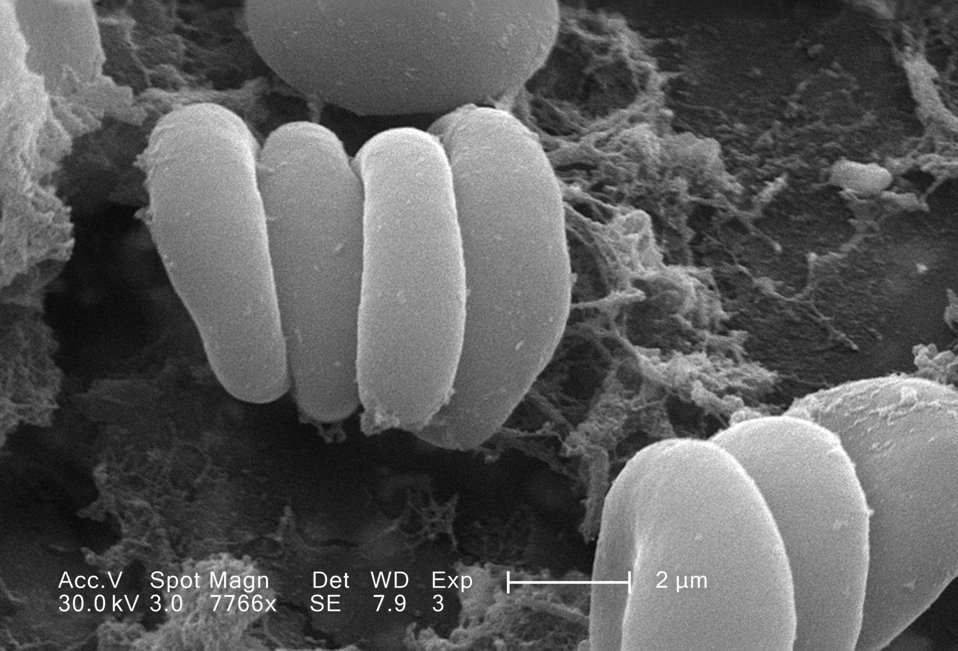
This scanning electron micrograph (SEM) depicted a closer view of a number of red blood cells found enmeshed in a fibrinous matrix on the luminal surface of an indwelling vascular catheter; Magnified 7766x. In this instance, the indwelling catheter was a tube that was left in place creating a patent portal directly into a blood vessel. Some of the erythrocytes are grouped in a stack known as a 'Rouleaux formation'. See PHIL 10902 for a colorized version of this SEM.